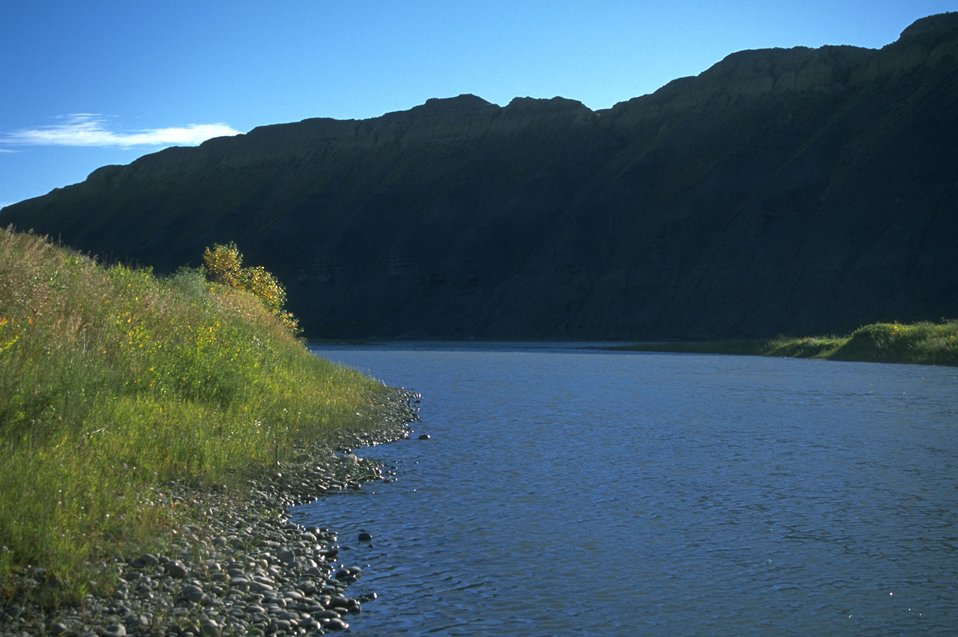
Missouri River near Fort Benton